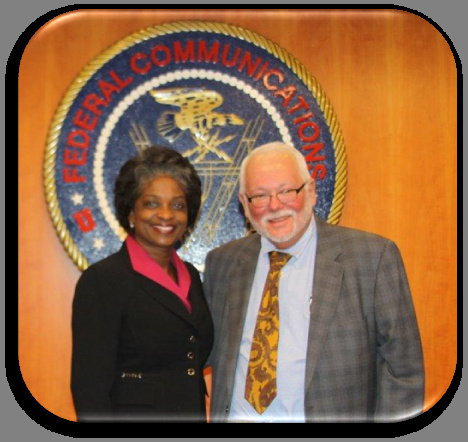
Commissioner Clyburn and Commissioner Landis